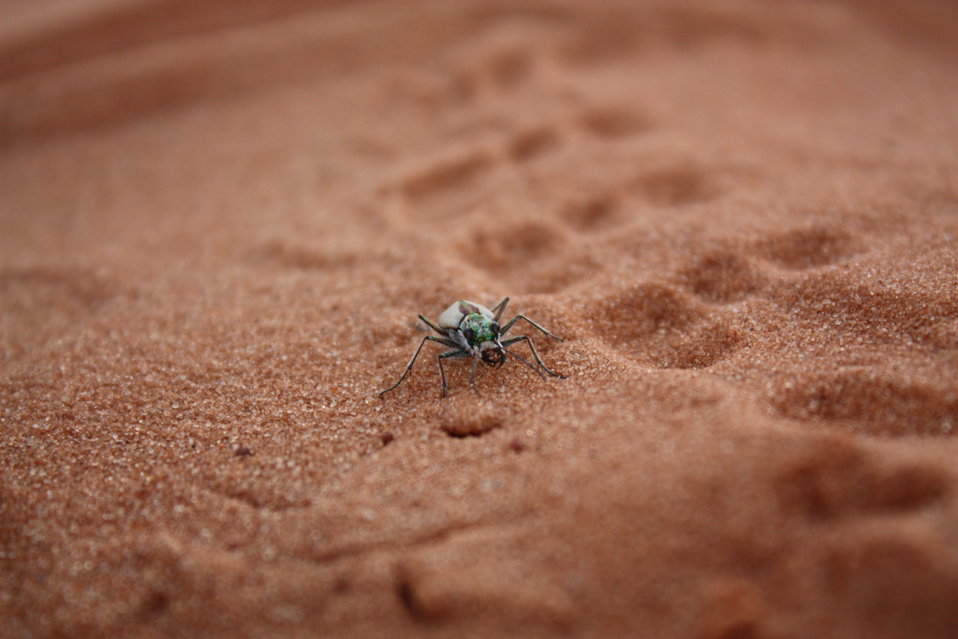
Coral Pink Sand Dune Tiger Beetle

The Coral Pink Sand Dune Tiger Beetle occurs within Kane County, Utah.